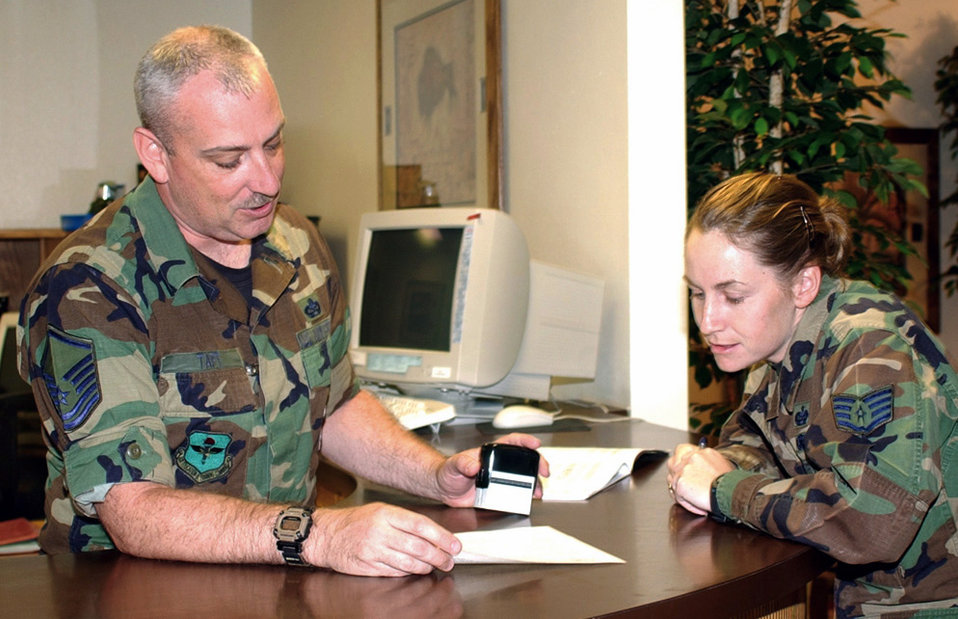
Legal matters

LUKE AIR FORCE BASE, Ariz. (AFPN) -- Master Sgt. Bob Taff assists a client at the legal office here. Taff is manager of the 56th Fighter Wing staff judge advocate office.